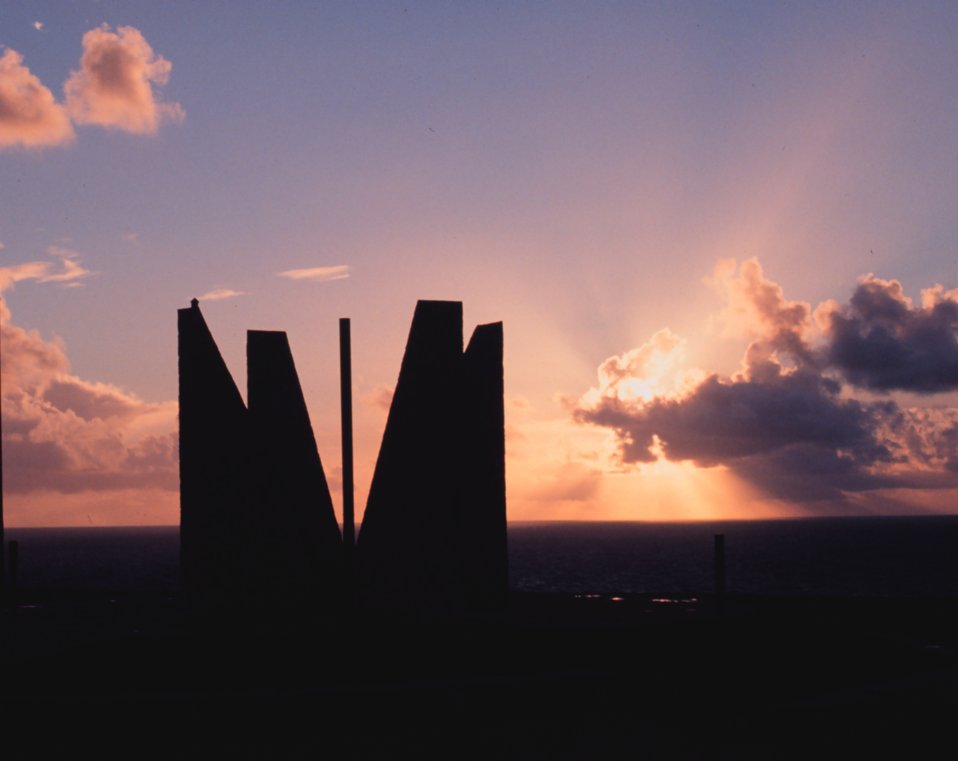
Sunrise at the Point Udall Millennium Monument. Here the new day begins for the United States in the Western Hemisphere. The marker represents 'a continuum between all who have come before and all who are yet to come.'